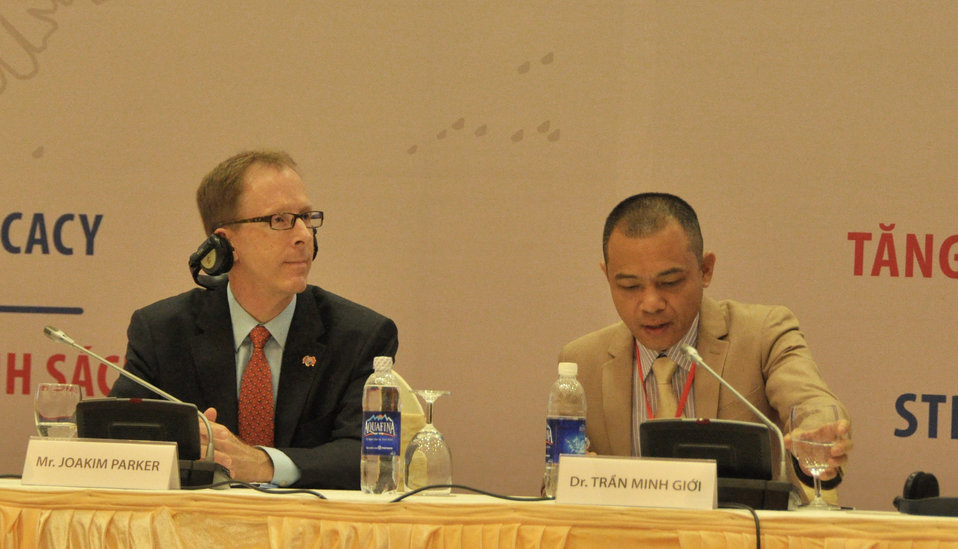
USAID Health Policy Initiative End of Project Workshop

Hanoi, August 14, 2013.